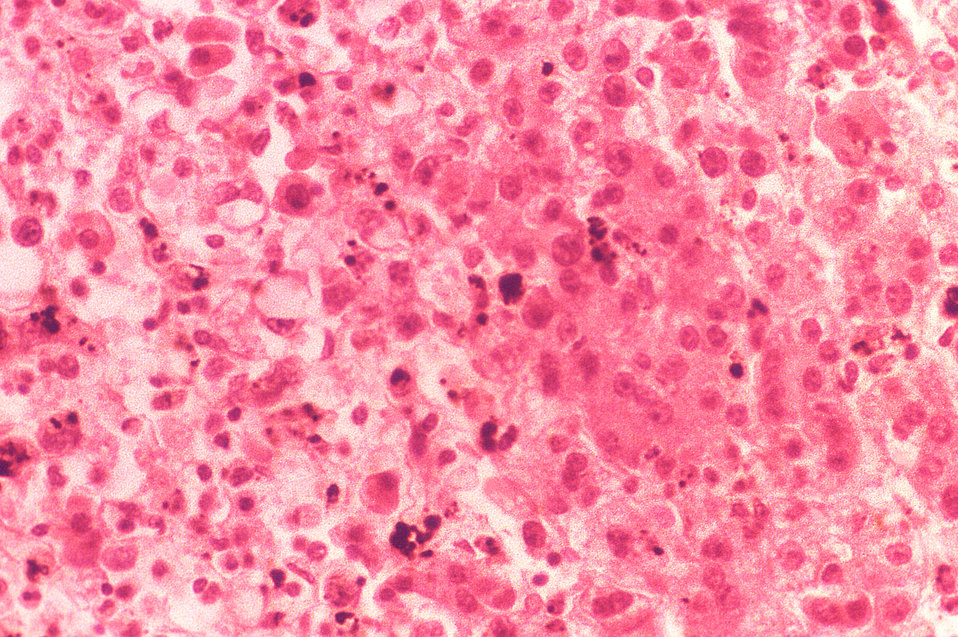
Under a high magnification of 400X, this hematoxylin-eosin-stained (H&E) photomicrograph depicts the cytoarchitectural changes found in a liver tissue specimen extracted from a deceased yellow fever patient. Of importance, is the 'presence of hepatocytes displaying polyvacuolar and microvacuolar fatty changes at the edge of the zone of necrosis. These lesions were found to be associated with malnutrition and a malarial infection.'. See PHIL 2176, and 8239, depicting TEMs of the yellow fever virus.